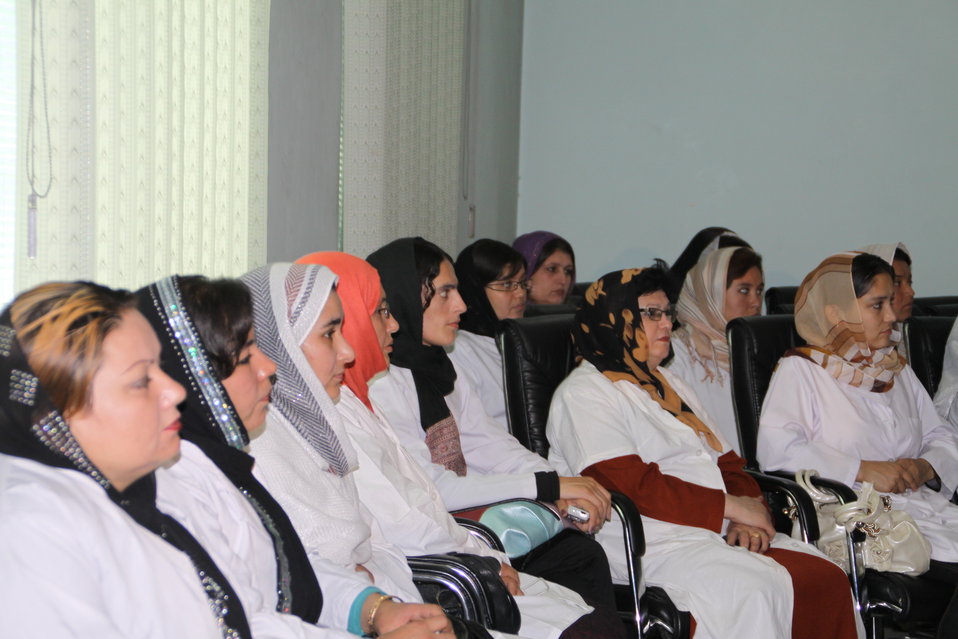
کشور مصر جهت بهبودی مصؤنیت مادری با افغانستان و ایالات متحده پیوست